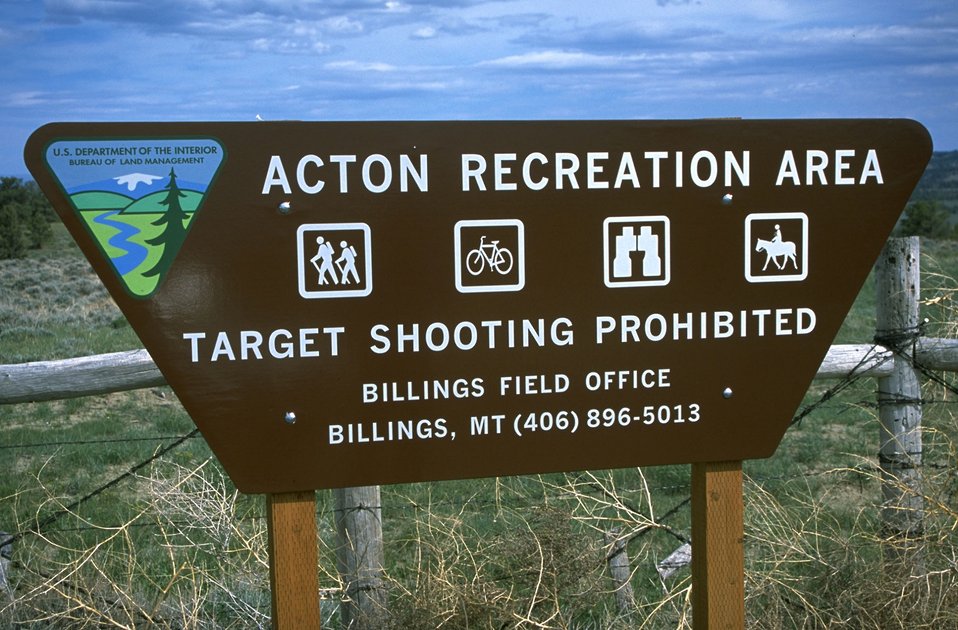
Entrance sign to the Acton Recreation Area